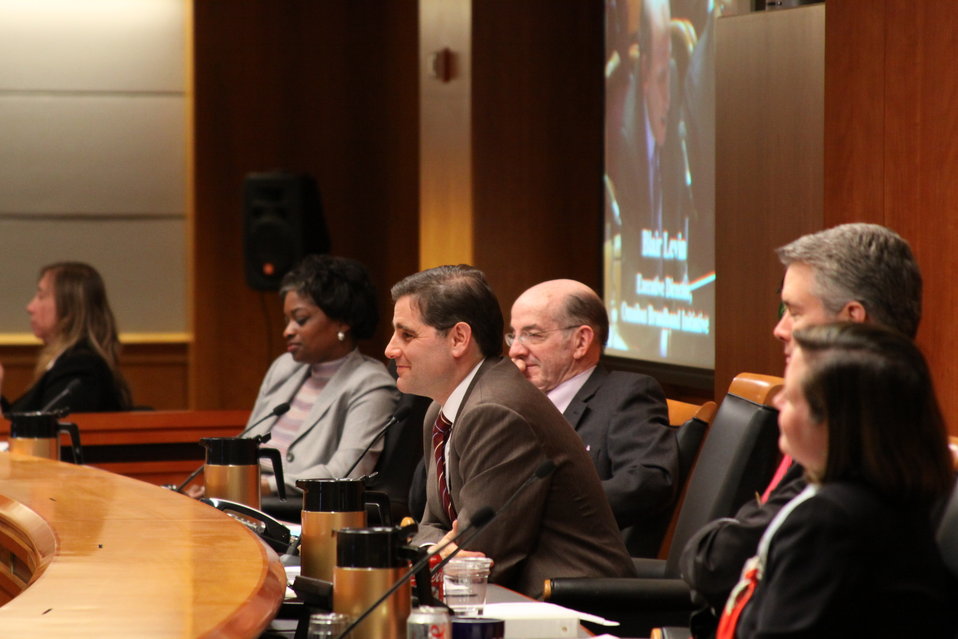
Open Commission Meeting - 2/18/2010

The Federal Communications Commission will hold an Open Meeting in Washington, DC. on February 18, 2010, which will include the following items:

E-Rate: An Order and Notice of Proposed Rulemaking to enable schools that receive funding from the E-Rate program to allow members of the general public to use the schools' Internet access during non-operating hours at no additional cost to the Universal Service Fund. This order and notice do not permit or require any changes to E-Rate applications due on February 11, 2010; Ex Parte Reform: A Notice of Proposed Rulemaking to improve the transparency and effectiveness of the FCC's decision-making process by reforming the ex parte rules; Procedural Reform: A Notice of Proposed Rulemaking to enhance the efficiency, openness, and transparency of the Commission's proceedings by improving and modernizing certain organizational and procedural rules; National Broadband Plan Status Report: Commission staff will report on the status of the National Broadband Plan, providing a framework for the national purposes portion of the Plan.